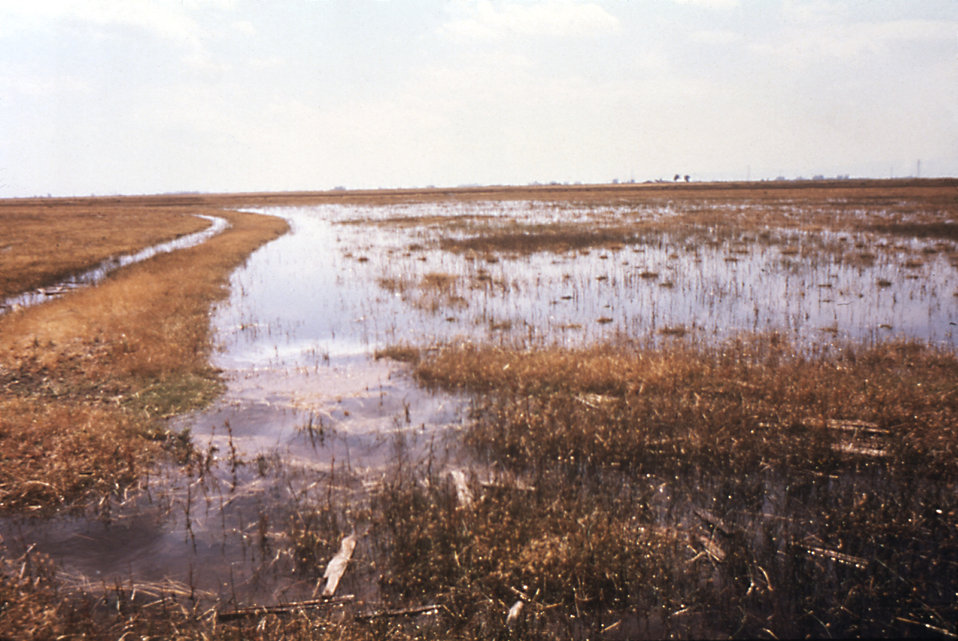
This 'contour check' irrigated field in a Solano, CA., M.A.D. (Mosquito Abatement District) contains areas of standing water.